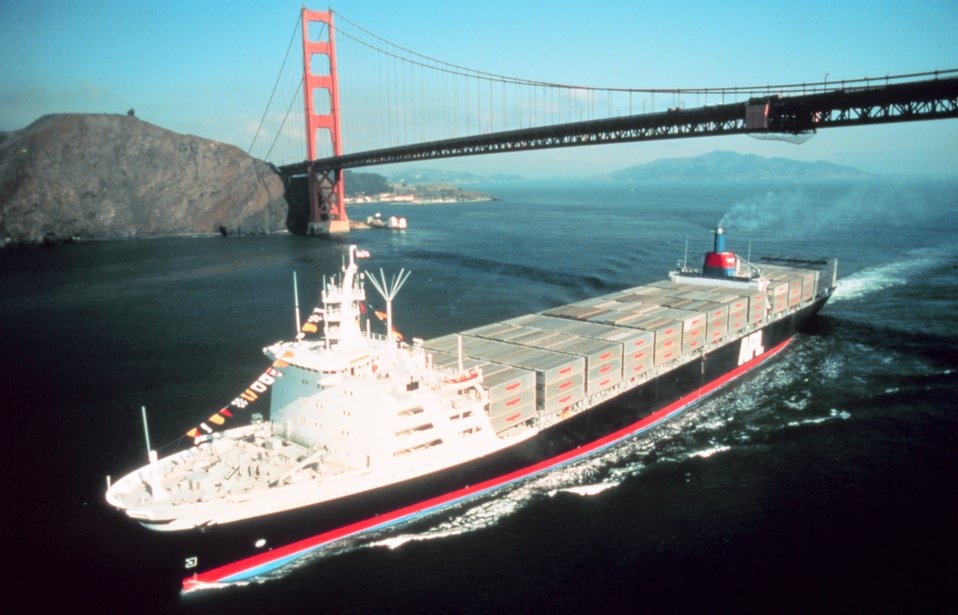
Containership outward bound under the Golden Gate Bridge.